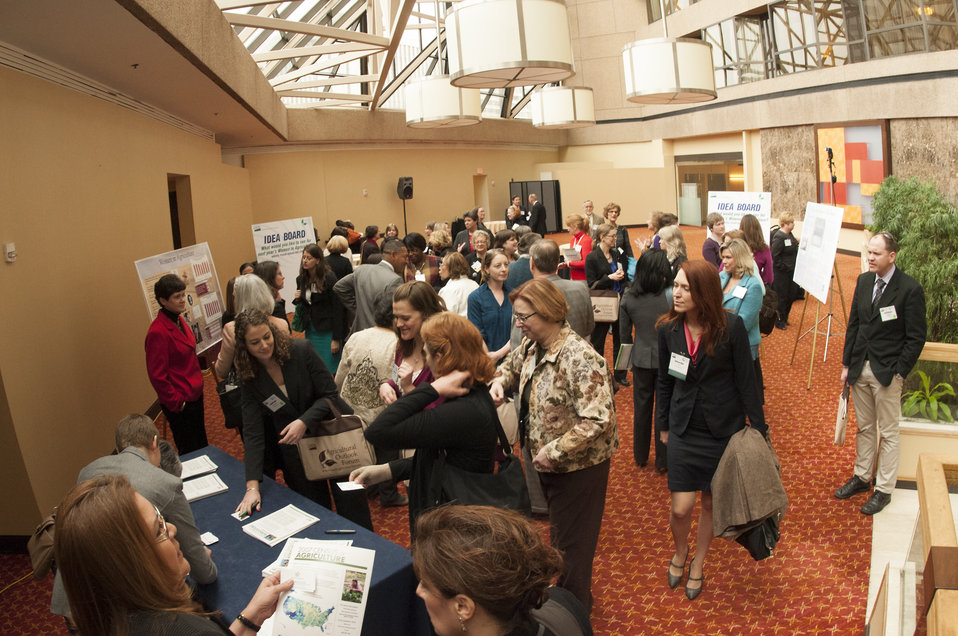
The U.S. Department of Agriculture (USDA) 2013 Agricultural Outlook Forum was held at the Crystal Gateway Marriott Hotel in Arlington, VA on Friday, Feb. 22, 2013. Agriculture Deputy Secretary Kathleen Merrigan participated in the Women in Agriculture-Speed Networking Event, which encouraged and promoted the participation of women in American agriculture.